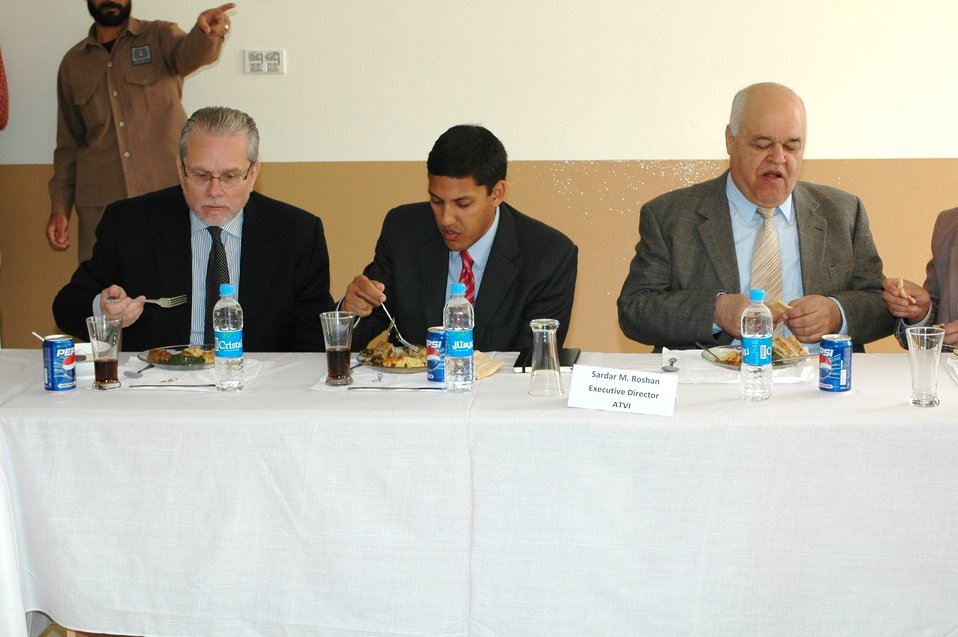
Dr Shah Visits Votech in Kabul